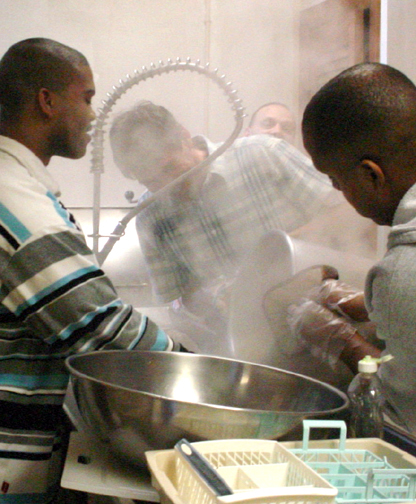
Soup's on

DERRY, N.H. (AFPN) - Airmen clean pots and pans at the Sonshine Soup Kitchen here. Once every two months, at least five Airmen from nearby New Boston Air Force Station volunteer to cook, serve meals and clean dishes at the kitchen. The base has supported the soup kitchen's mission for more than six years.